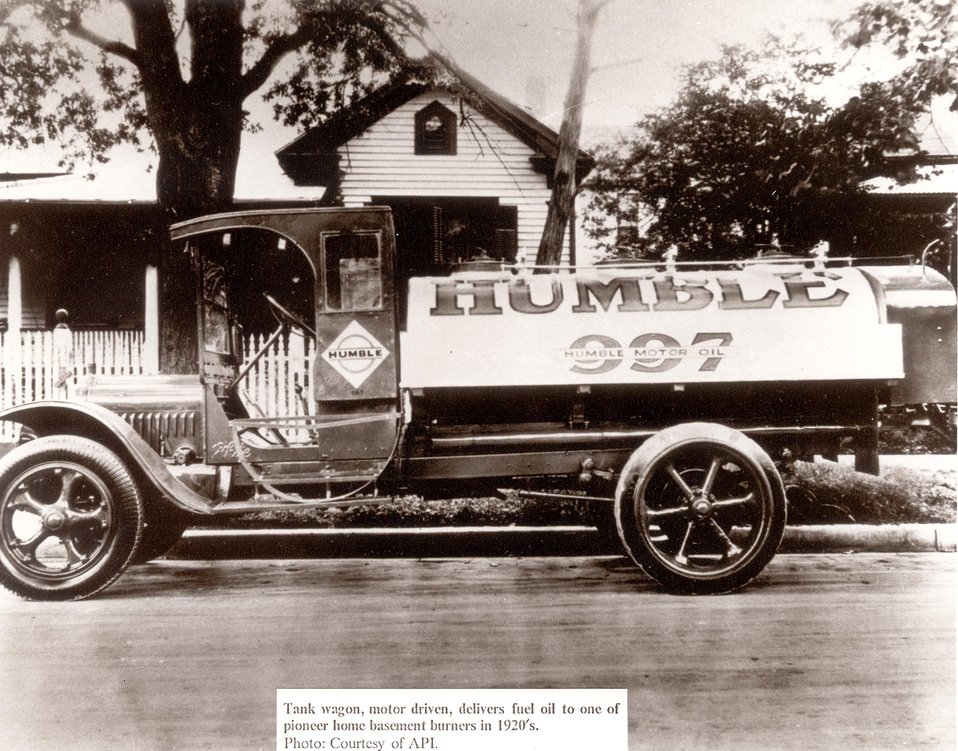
Tank wagon, motor driven, delivers fuel oil to one of the pioneer home basement burners in 1920's.